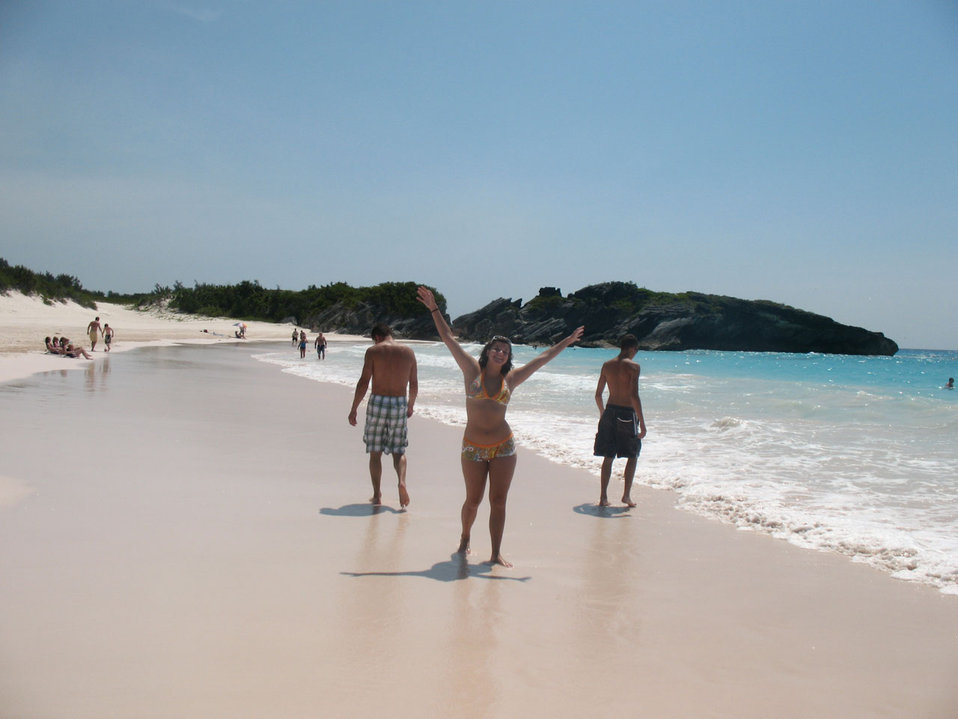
Party people

Happy people walking the beach.